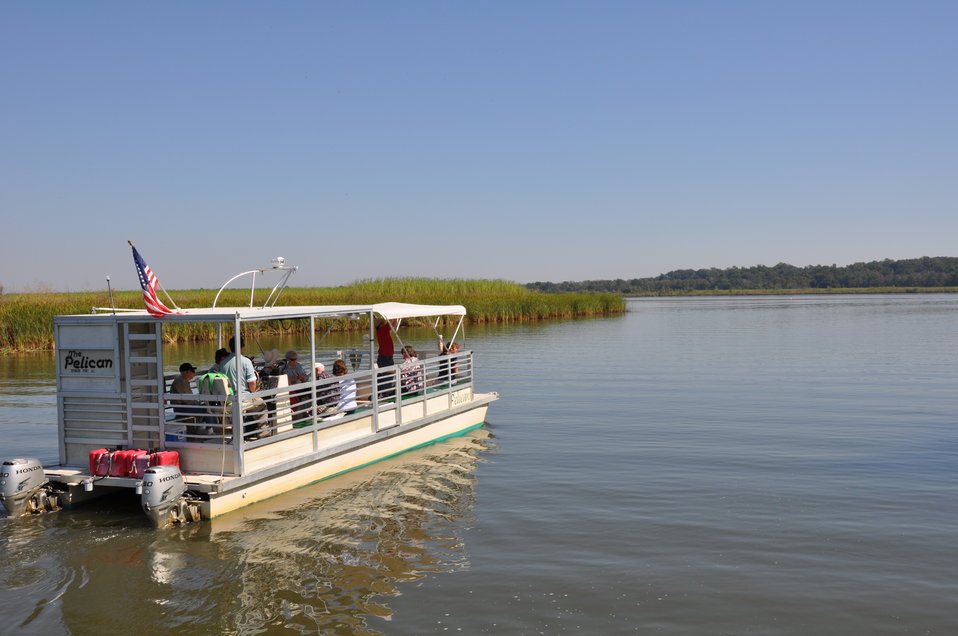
Ecotourism in the Mobile, Alabama